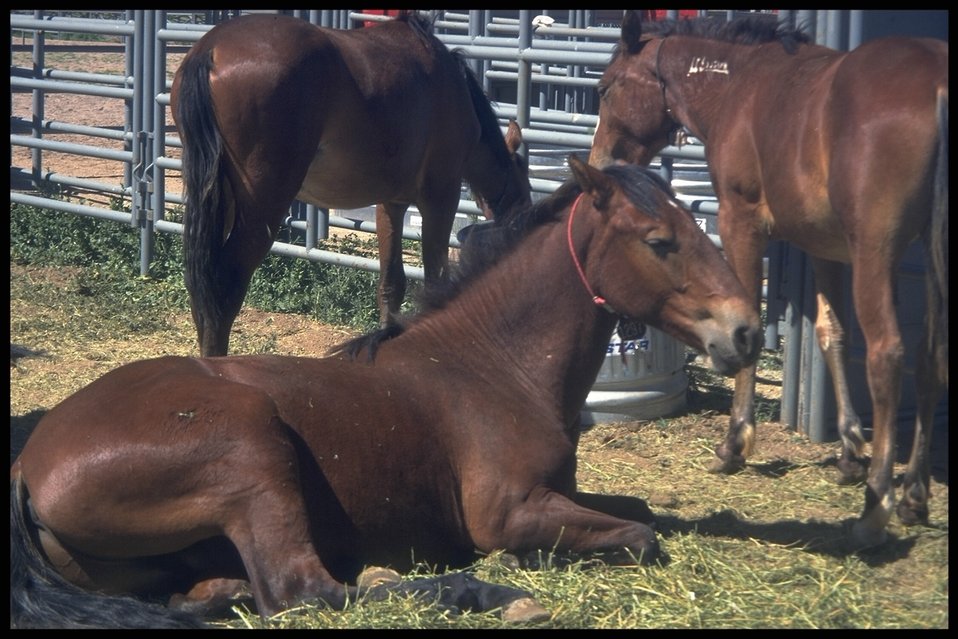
Chino Valley wild horse and burro adoption, near Prescott, Arizona, 1998.